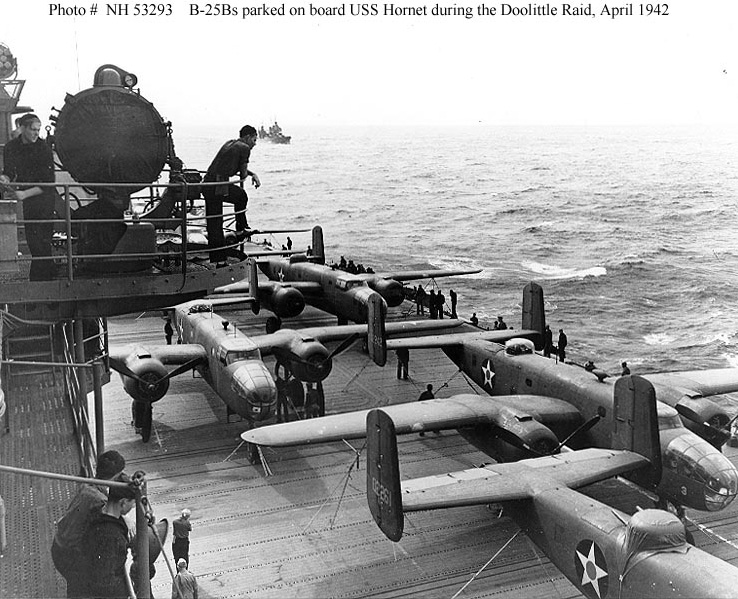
Doolittle's Raid

Several of the mission's 16 B-25B bombers are lined up on the deck of the USS Hornet (CV-8). In the foreground is tail No. 40-2261, which was mission plane No. 7, piloted by 2nd Lt. Ted W. Lawson. The next plane is tail No. 40-2242, mission plane No. 8, piloted by Capt. Edward J. York. Both aircraft attacked targets in the Tokyo area. Lt. Lawson later wrote the book